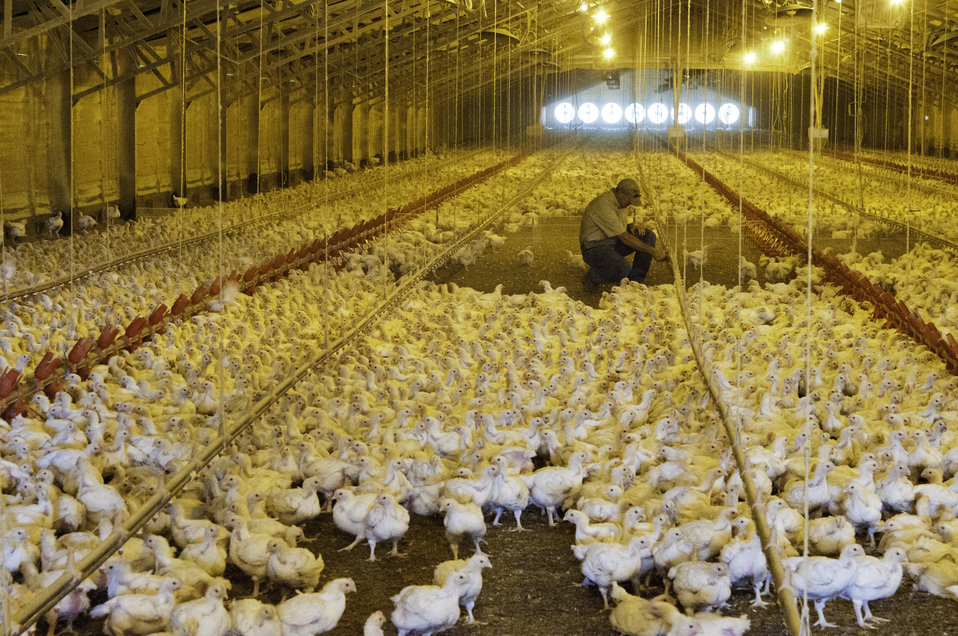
Bobby Morgan checks on broiler hens in one of his chicken houses in Luling, TX on Aug. 23, 2013.